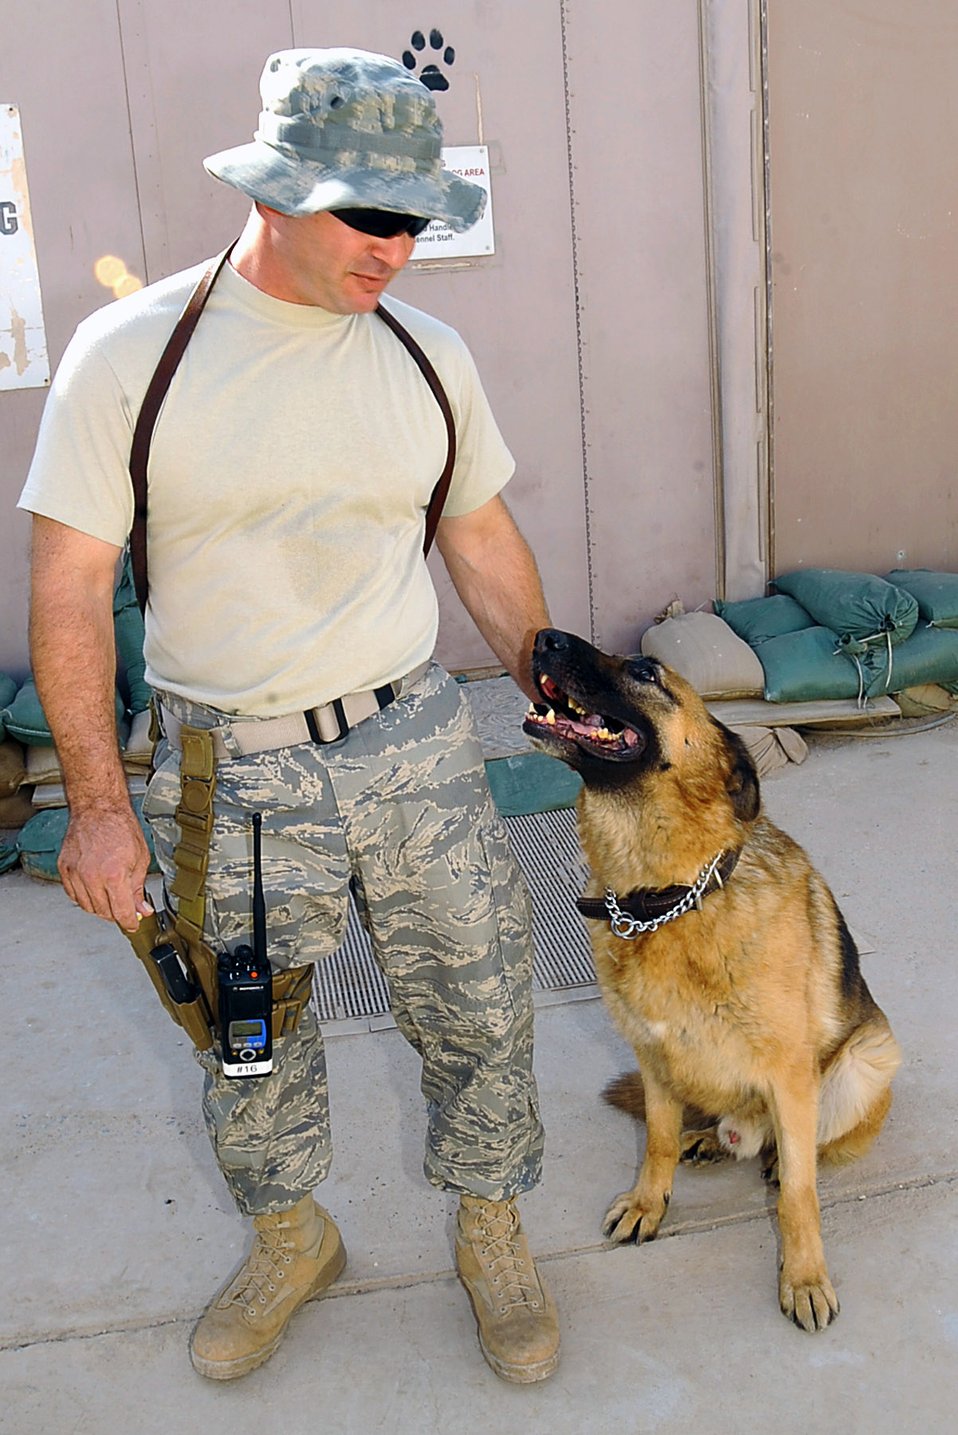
Ali Airmen mourn loss of K-9 team member

Goro looks up to Staff Sgt. Sean Neisen during a break in training July 7 at Ali Base, Iraq. Goro, an 8-year-old military working dog, and Sergeant Neisen deployed to the 407th Air Expeditionary Group's Provost Marshal Office from the 435th Security Forces Squadron at Ramstein Air Base, Germany. The German shepherd died of natural causes July 28.